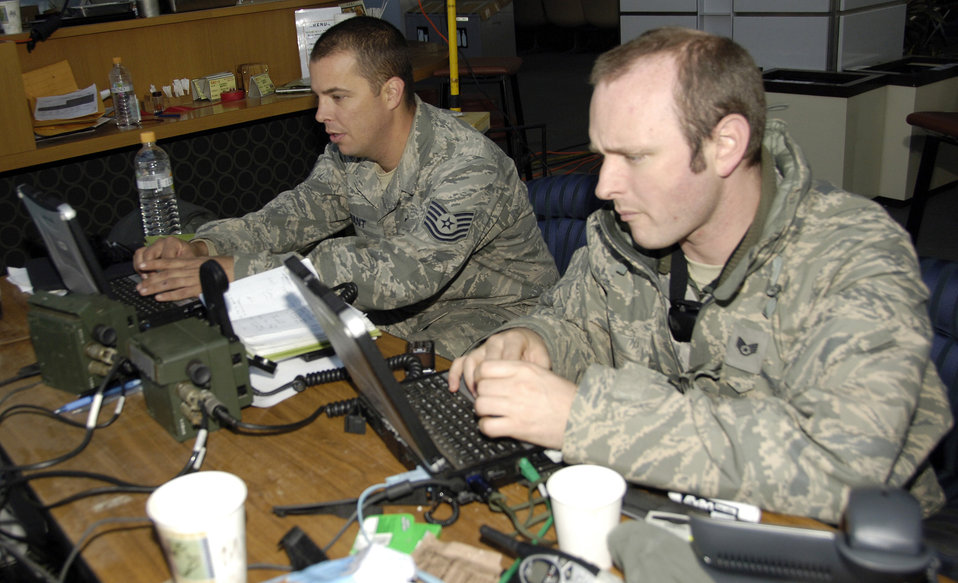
Recovering Hope

Tech. Sgt. Denis Bryant (left) and Staff Sgt. Chris Sefton review aircraft landing schedules here March 29, 2011, at Sendai Airport, Japan. A team of 20 Airmen deployed there to help the Japanese recover and rebuild in the wake of the March 11 earthquake and tsunami. Bryant is an air transportation craftsman from Hickam Air Force Base, Hawaii; Sefton is a ground radio technician from Kadena Air Base, Japan.